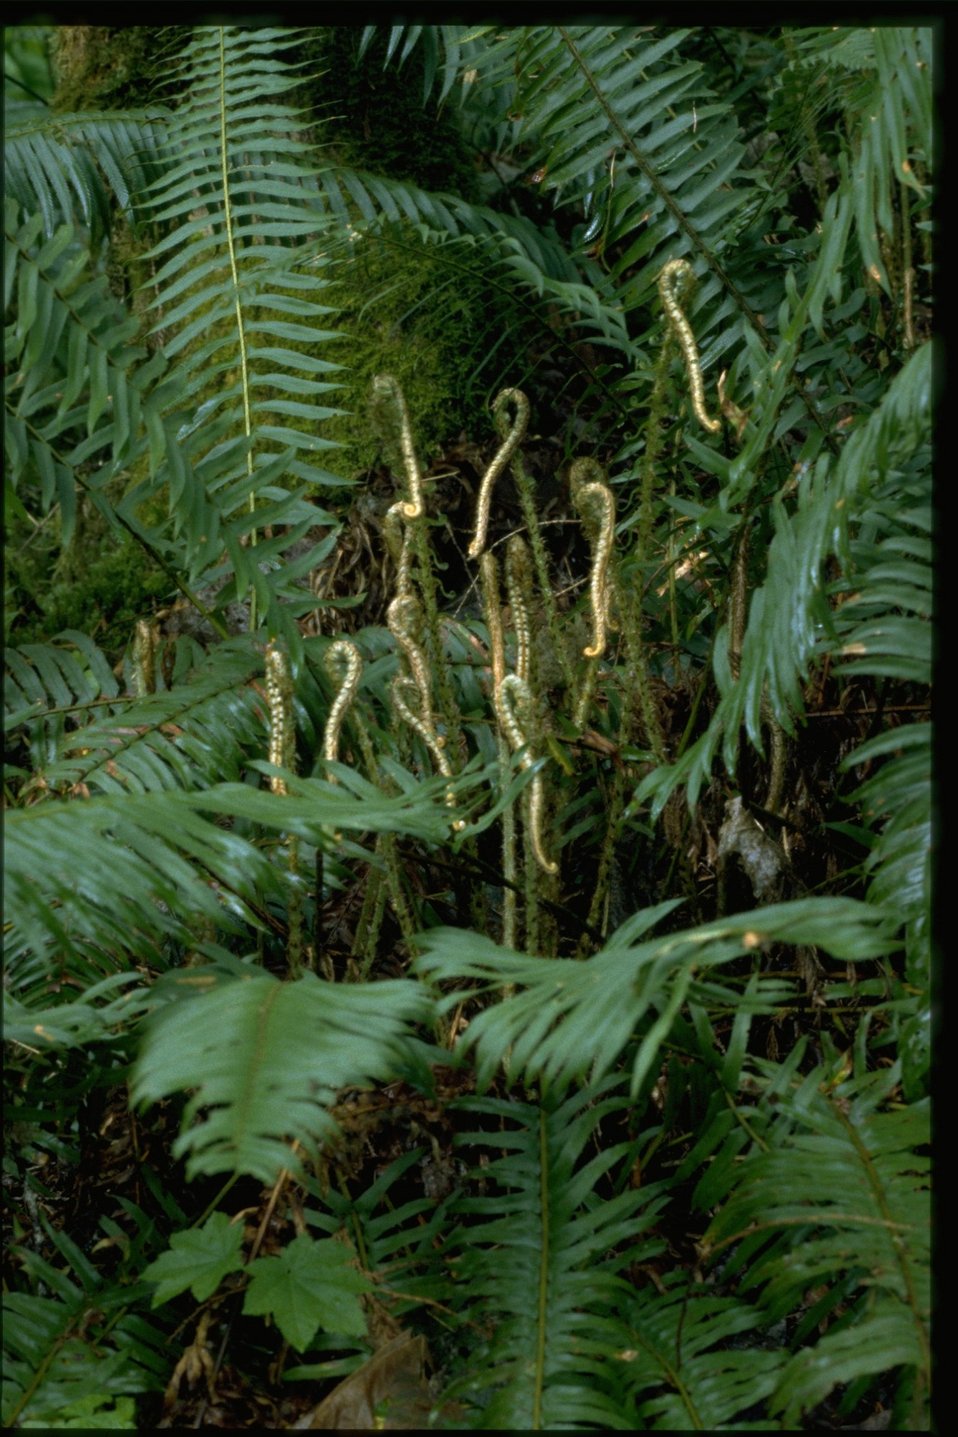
Polystichum manitum.